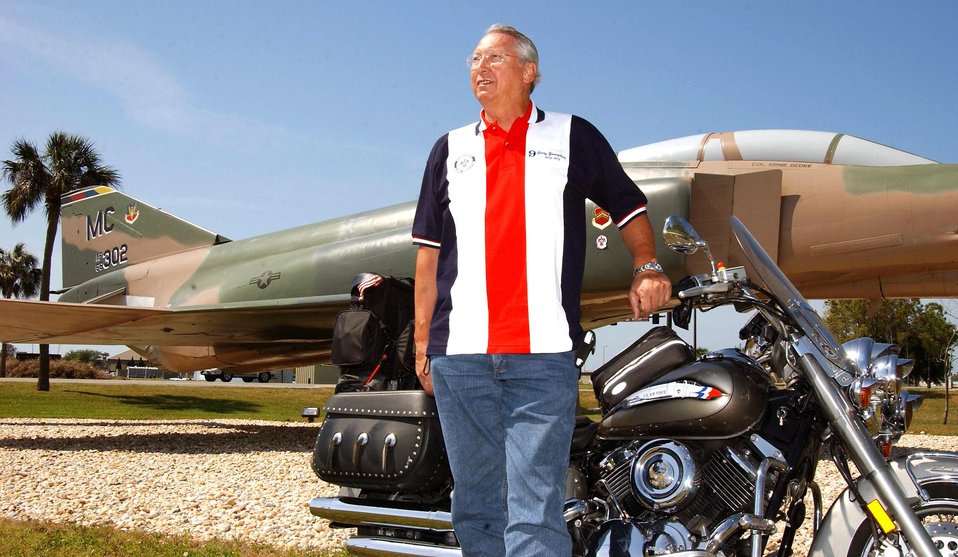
Former Thunderbird searches for Phantoms

MACDILL AIR FORCE BASE, Fla. - Retired Col. Gary Younglove stopped here recently on a nationwide journey to visit each of the original F-4 Phantom Thunderbirds. He is a retired administrative officer for the U.S. Air Force Aerial Demonstration Squadron.